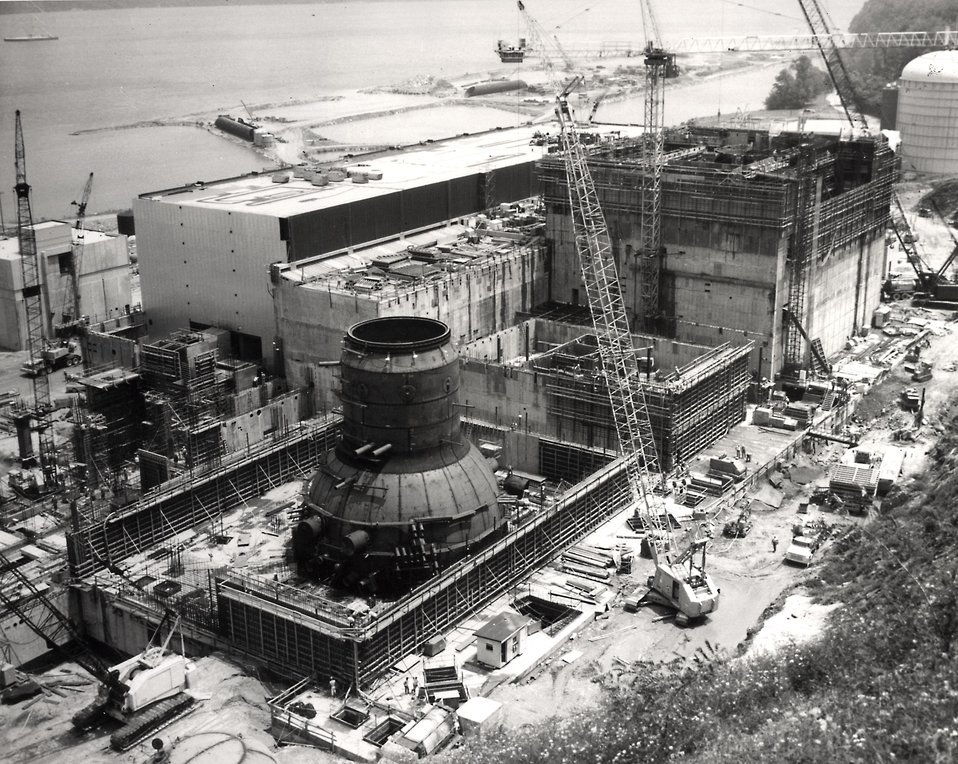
THE THREE PEACH BOTTOM REACTORS will provide some 2,170 Mwe. to the Maryland, Pennsylvania, New Jersey grid when Units 2 and 3 (foreground) are completed in 1970 and 1972. Circa 1970.